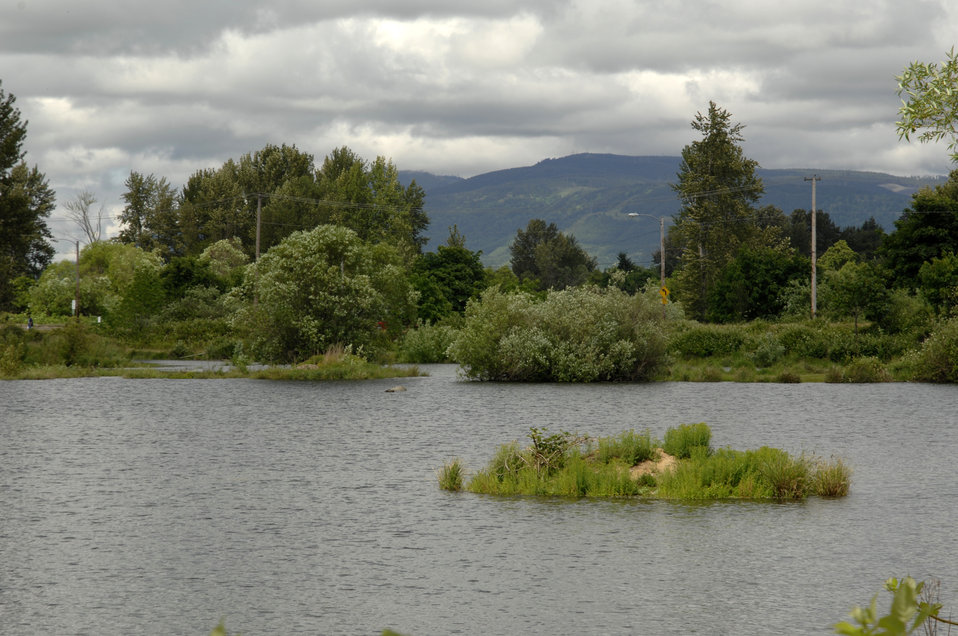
A pond in the city of Eugene, Oregon on June 10, 2008 is involved in the containment of aquatic invasive species with assistance from U.S. Department of Agriculture’s (USDA) Forest Service (FS). The goal of the USDA FS invasive species program is to reduce, minimize, or eliminate the potential for introduction, establishment, spread, and impact of invasive species across all landscapes and ownerships.